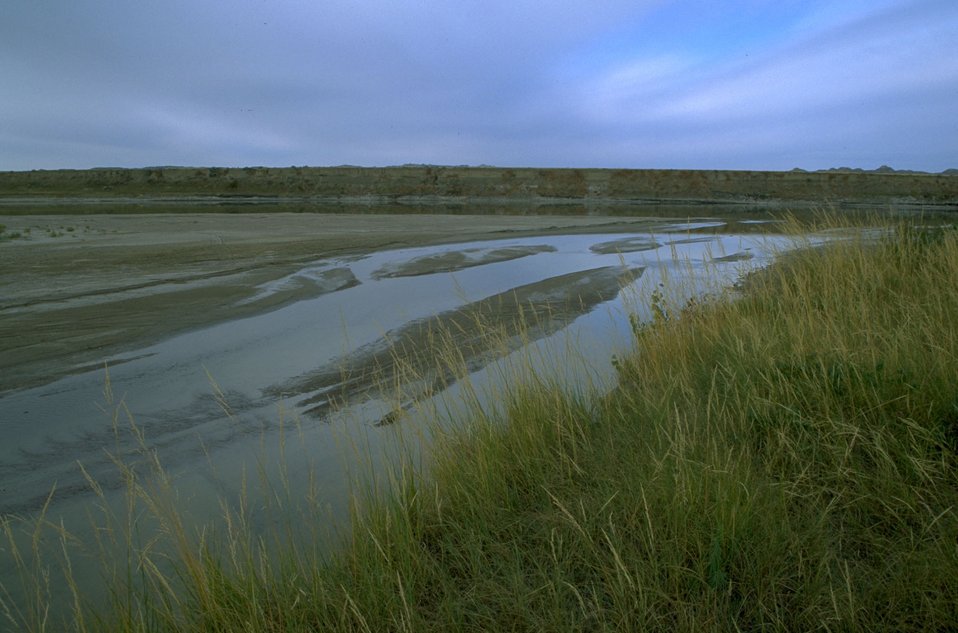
Evening at the confluence of the Yellowstone and Powder Rivers